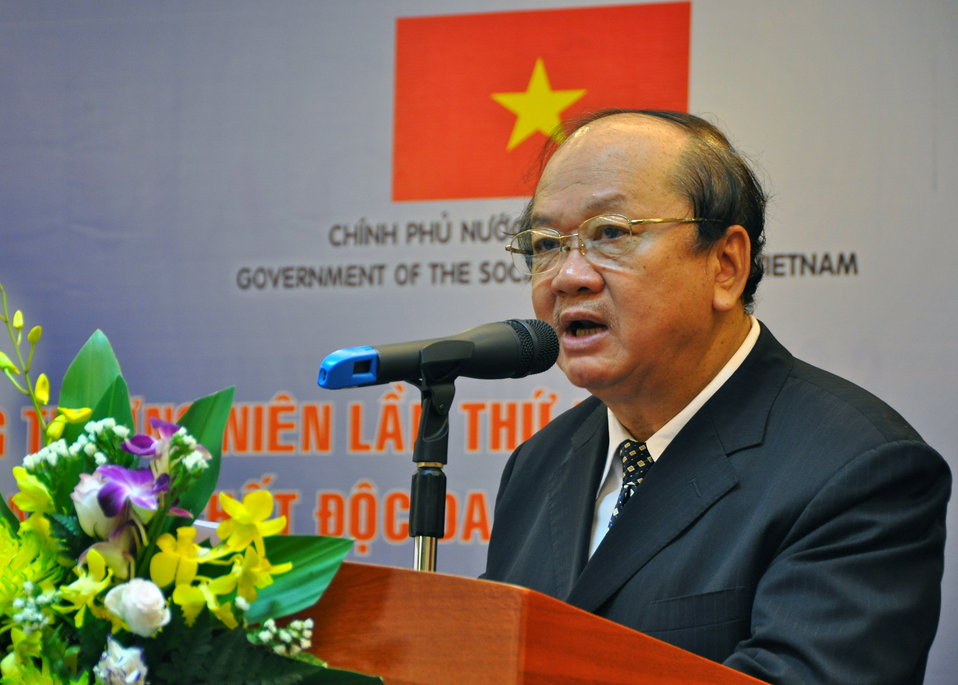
Deputy Minister Bui Cach Tuyen, Ministry of Natural Resources and Environment at the Seventh U.S.-Vietnam Advisory Committee Meeting (JAC)

Hanoi, September 20, 2012